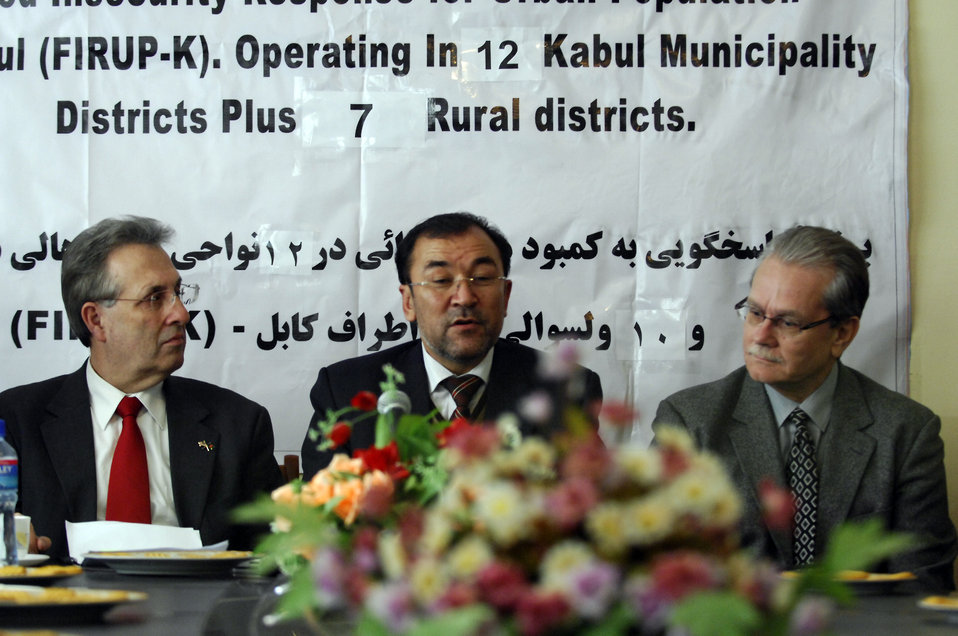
Care83 (1)